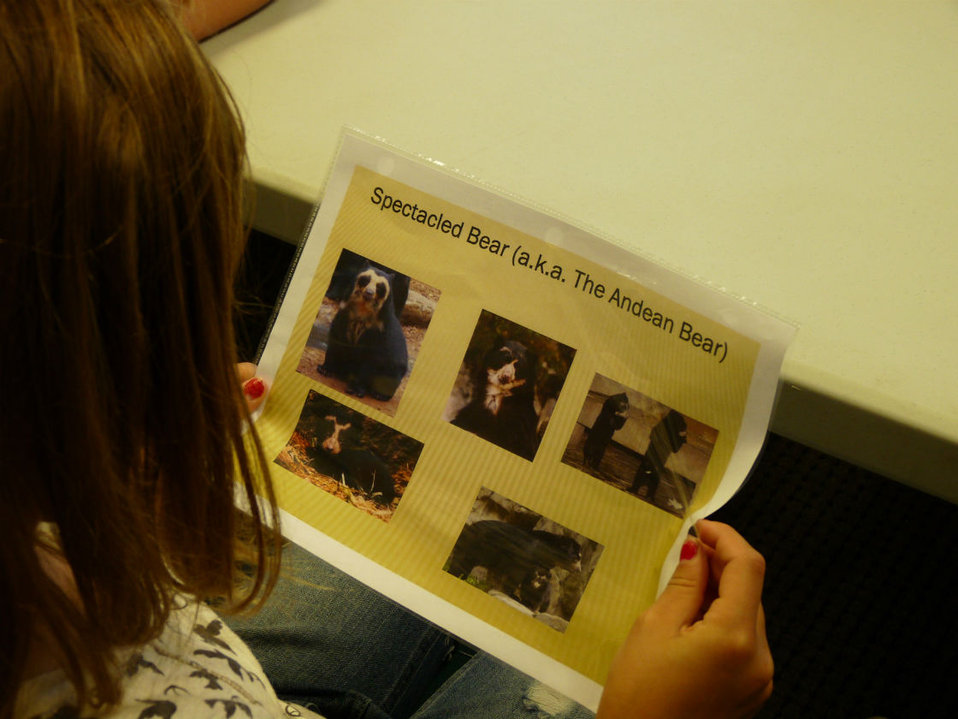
The youth learn about bears from around the world

Graphics of each of the eight species of bears of the world were passed from student to student.